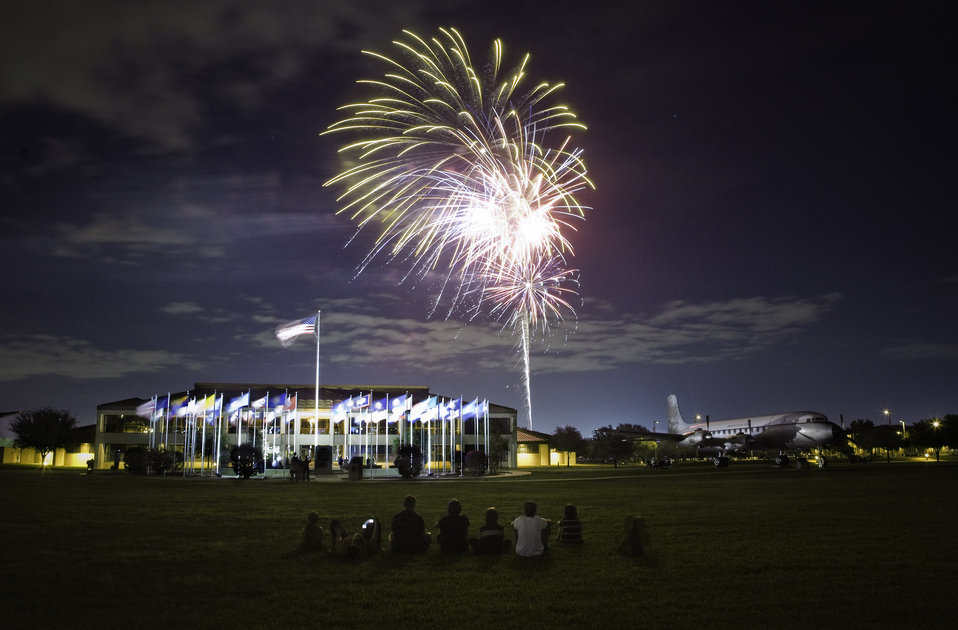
Evening Under the Stars

The Rains Family viewed the Fourth of July fireworks display from the parade grounds near the 37th Training Wing headquarters building at Lackland Air Force Base, Texas. Lackland celebrated its 30th Star Spangled Festival July 4 with military and public communities by hosting activities and events, including live entertainment, a children's carnival, contests and exhibitions. The activities were at the Lackland Amphitheater Grounds.